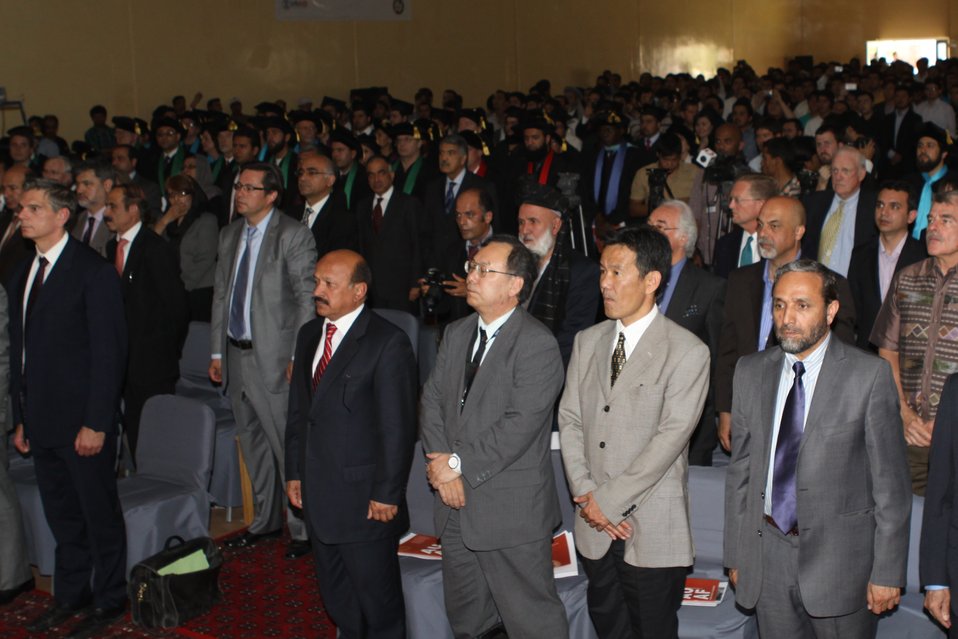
100526 AUAF Graduation 144